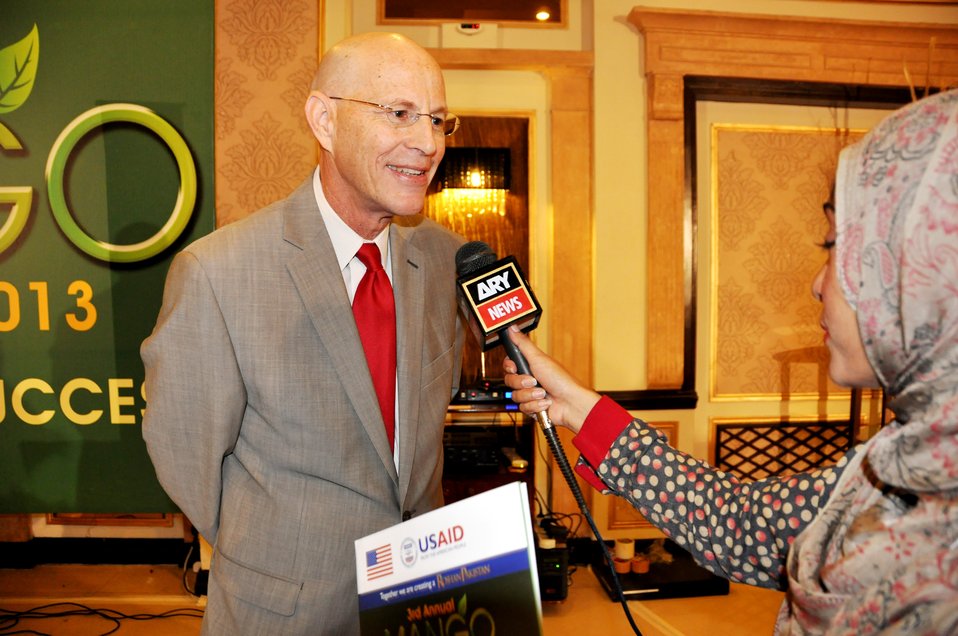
Mango Conference

USAID's Mission Director, Greg Gottlieb talking to the media